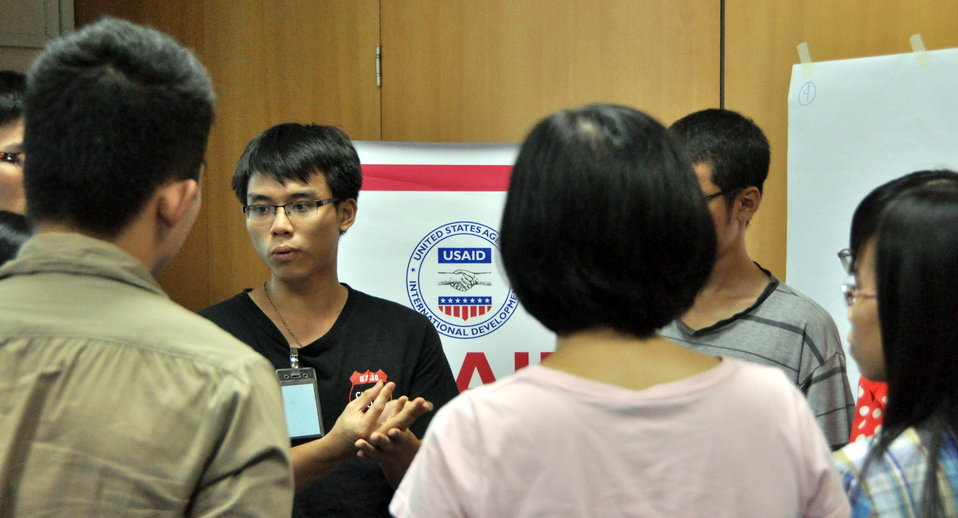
International Youth Day 2013: USAID hosts a lively discussion and group exercise on how youth can join in to advance development

Hanoi, August 12, 2013.